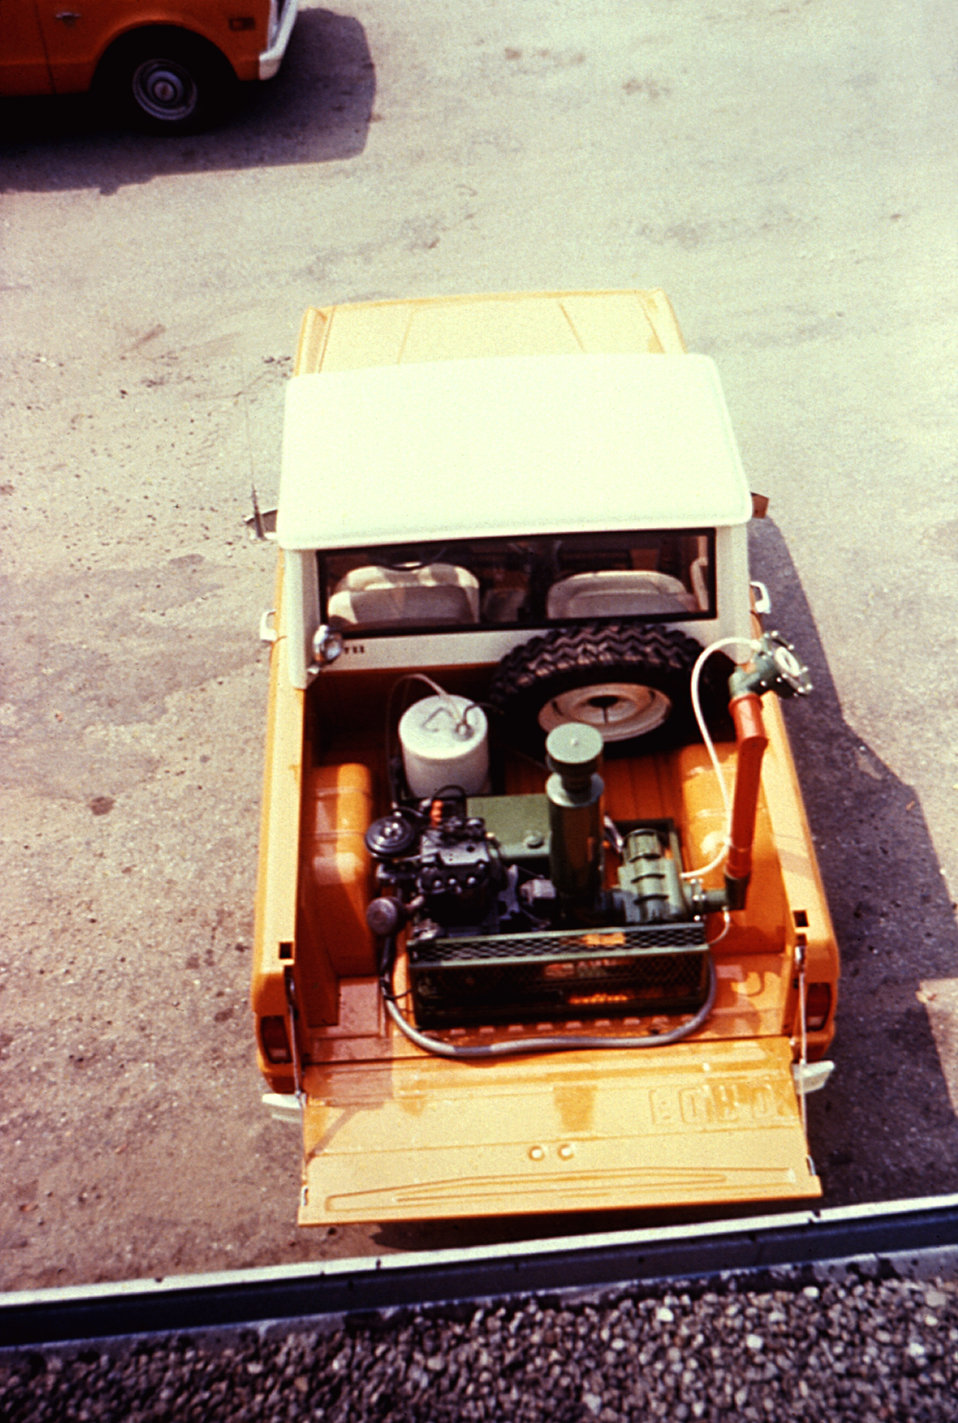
This 1981 image depicts a truck-mounted early model LECO-HD ULV (ultra-low volume) non-thermal fog generator.